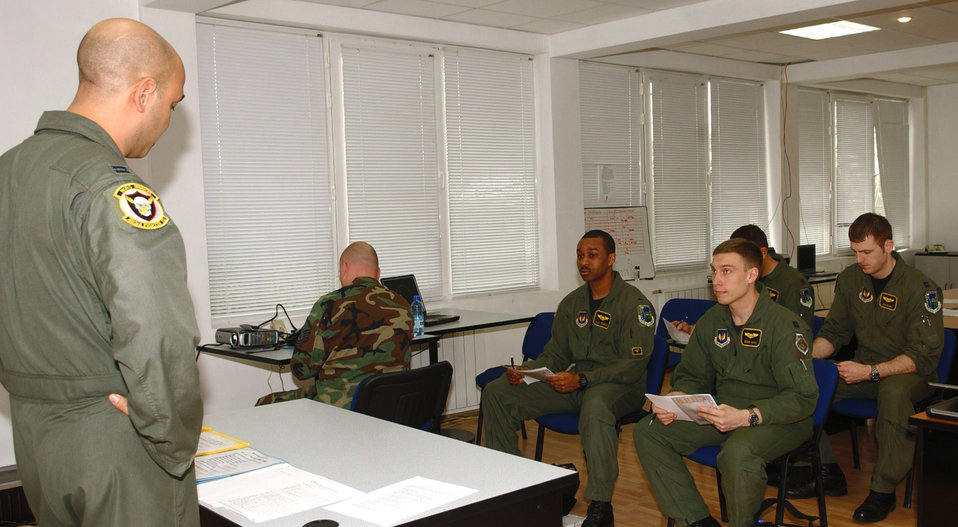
Lakenheath Airmen support NATO summit

Capt. Danny Cannon briefs aircrews prior to a mission supporting the NATO summit in Romania April 1 at Graf Ignatievo Air Base, Bulgaria. F-15 Eagles deployed from Royal Air Force Lakenheath, England, are projecting airpower in support of the NATO summit in Bucharest, Romania. Captain Cannon is the 493rd Expeditionary Fighter Squadron chief of scheduling.